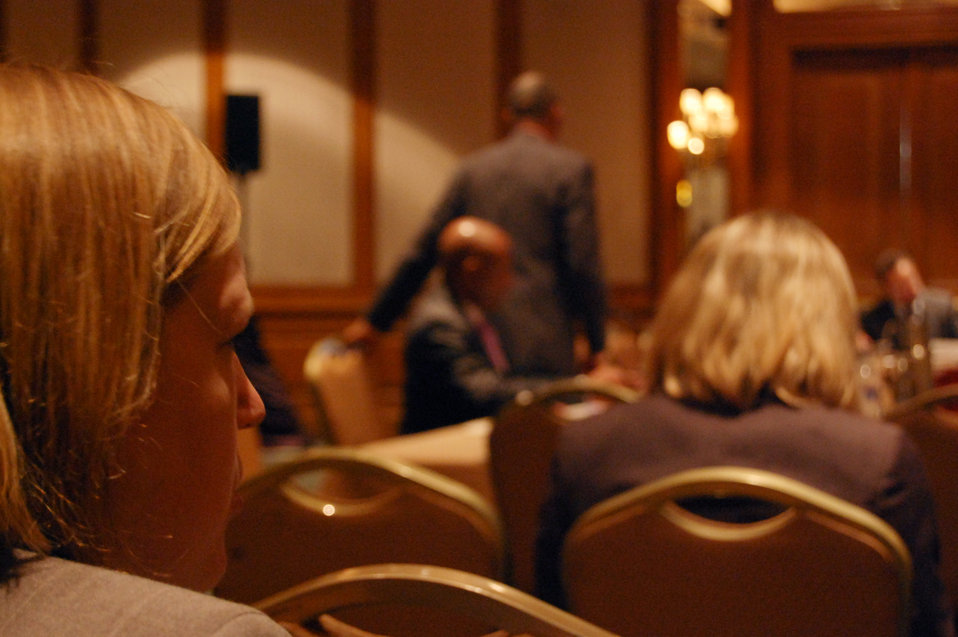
PACHA conf032